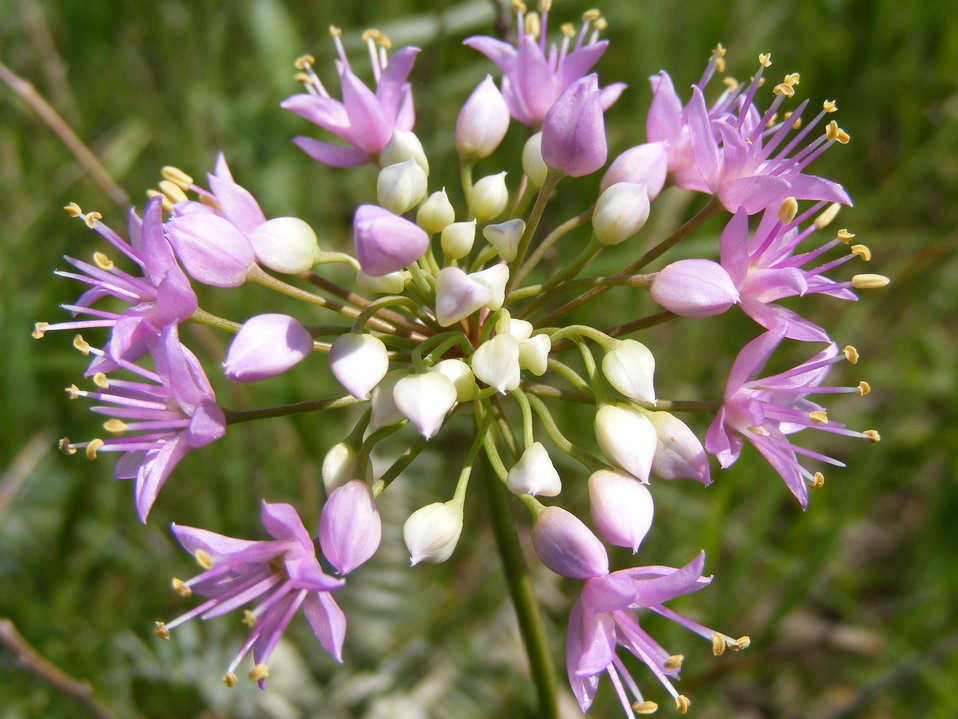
Pink and White Beauty

A pink wild onion (Allium stellatum) blooms in the tallgrass prairie of Waubay Wetland Management District in South Dakota.

Credit: Laura Hubers / USFWS

Photo Contest Entry #162